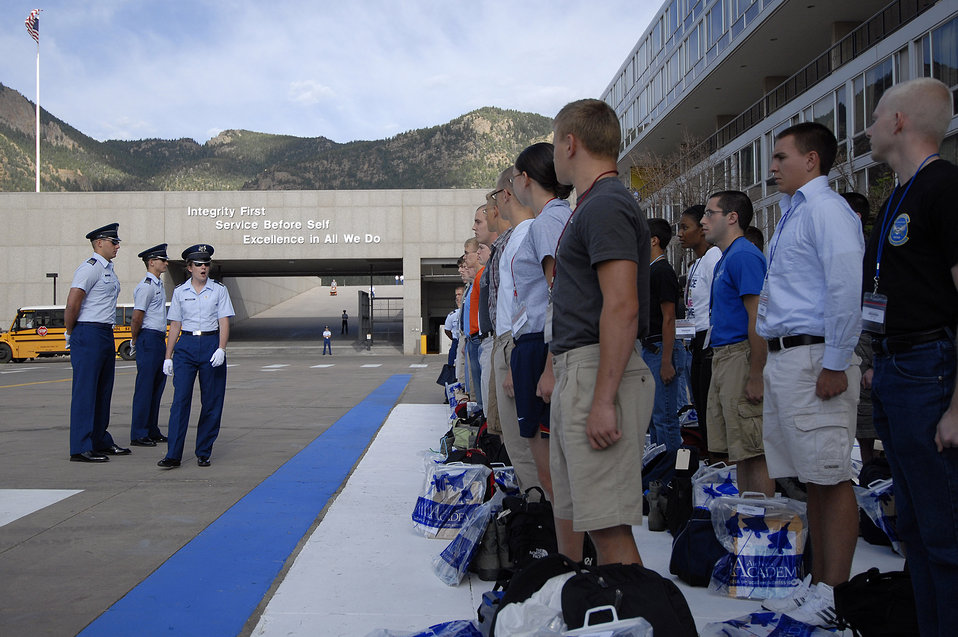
Class of 2012 arrives at Academy

Cadet 2nd Class Jamie Daugherty welcomes basic cadets to the Core Values Ramp during inprocessing as the Class of 2012 June 26 at the U.S. Air Force Academy, Colo. Inprocesing marks the start of 38 days of Basic Cadet Training, which is designed to prepare basic cadet trainees for entry into the cadet wing.